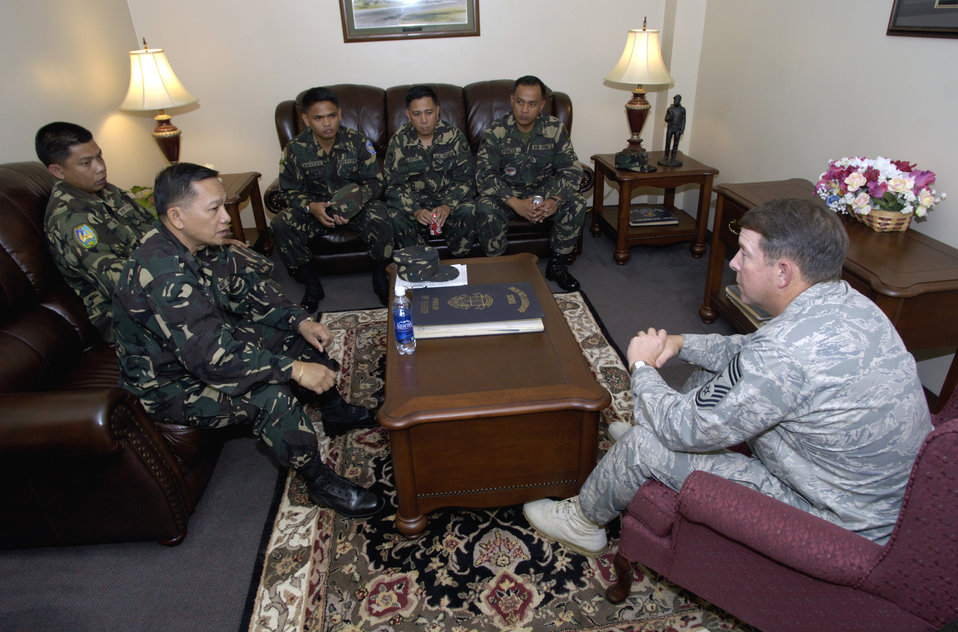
Philippine first

Pacific Air Forces Command Chief Master Sgt. Rodney McKinley talks with Command Sgt. Maj. of the Philippine Air Force Cesar Soloria and other Philippine Air Force students after their Airman Leadership School class Tuesday, March 7, 2006, at Hickam Air Force Base, Hawaii. They are the first Philippine Air Force students to attend the class. They will take back the lessons learned and develop their own leadership course within their air force.